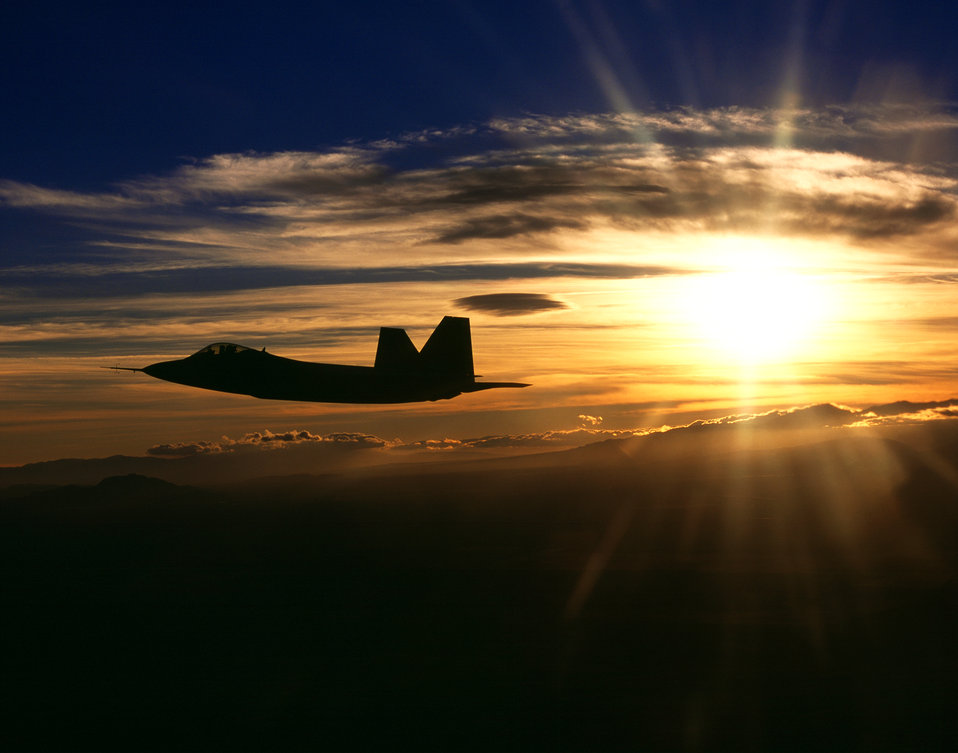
Sunset Raptor

OVER CALIFORNIA -- An F/A-22 Raptor flies a training mission here.